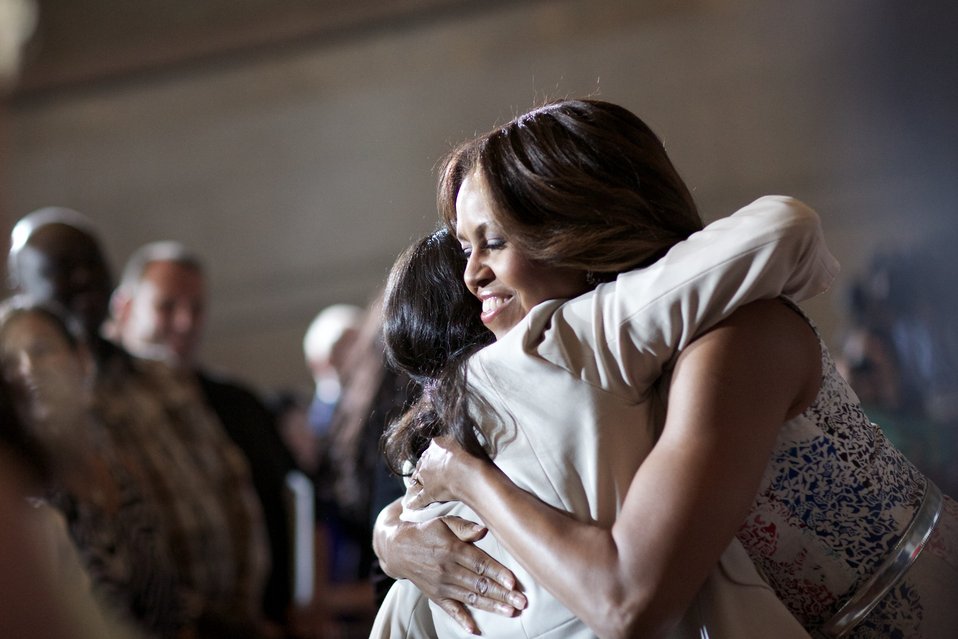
Naturalization Ceremony with Michelle Obama